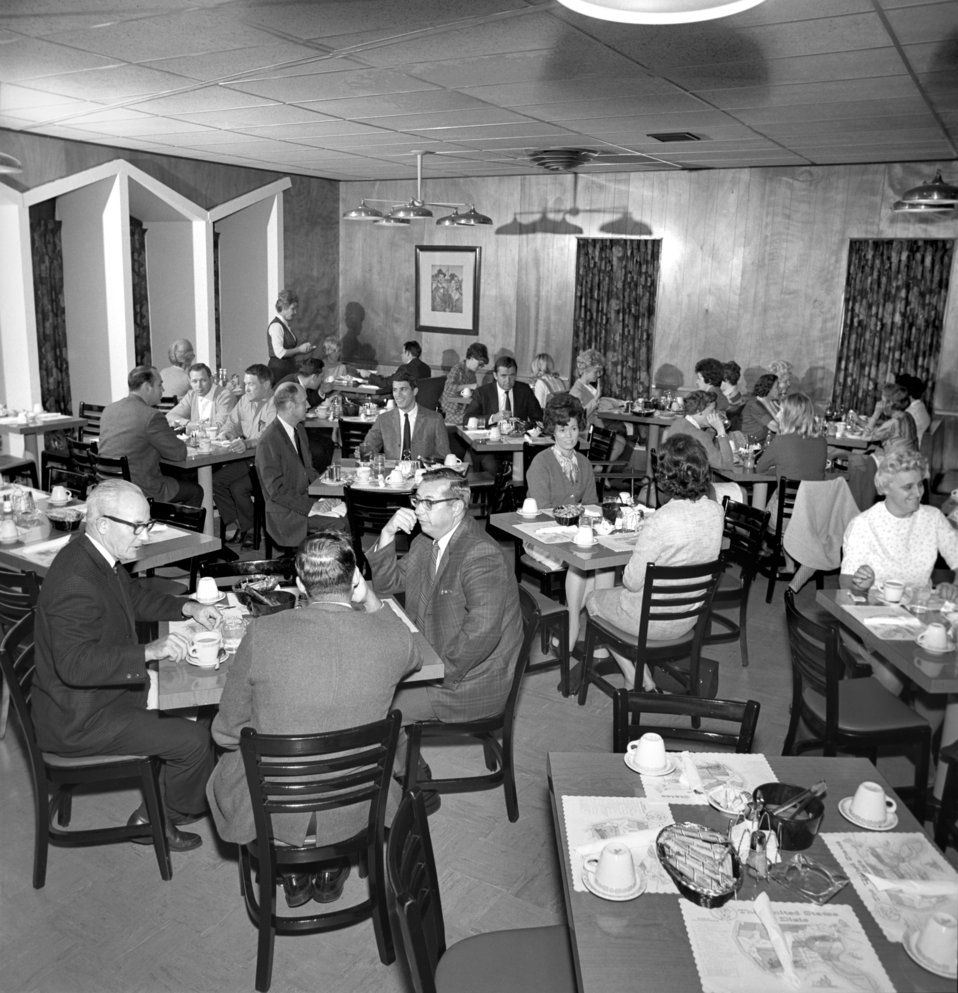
Restaurant in Oak Ridge 1968

68-580 DOE photo Frank Hoffman 11-25-1968 Oak Ridge Tennessee